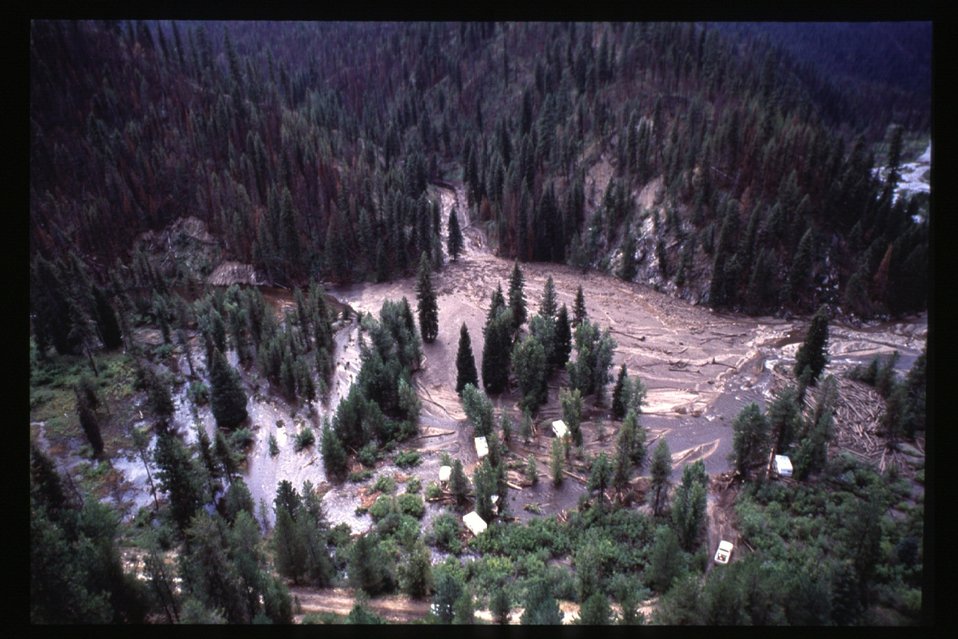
8th Street Fire Four Rivers Field Office LSRD Lower Snake River District